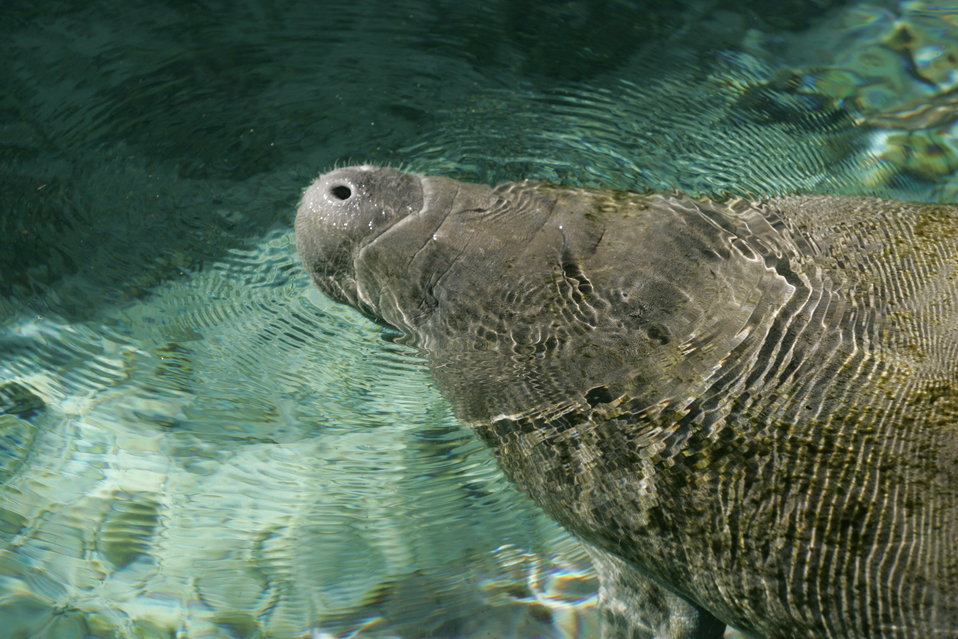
Florida manatee

Three Sisters Springs in the Crystal River, Florida area provides warm-water refuge for the endangered Florida manatee.